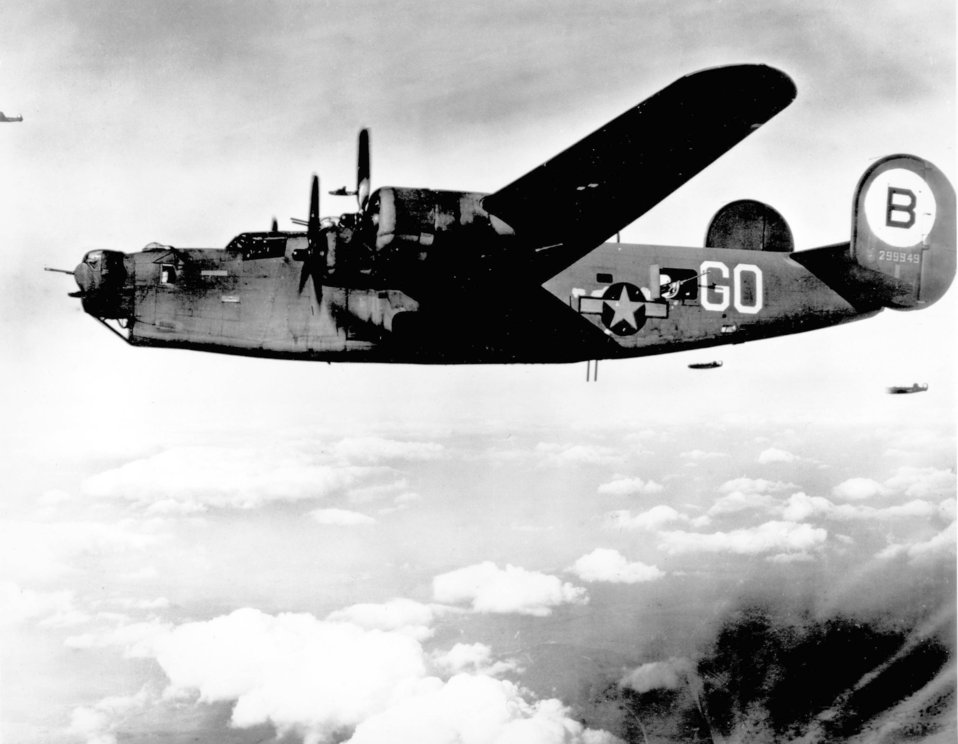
CONSOLIDATED B-24

1940's -- Consolidated B-24's over Friedrichshaven, Germany. The B-24 was employed in operations in every combat theater during World War II.